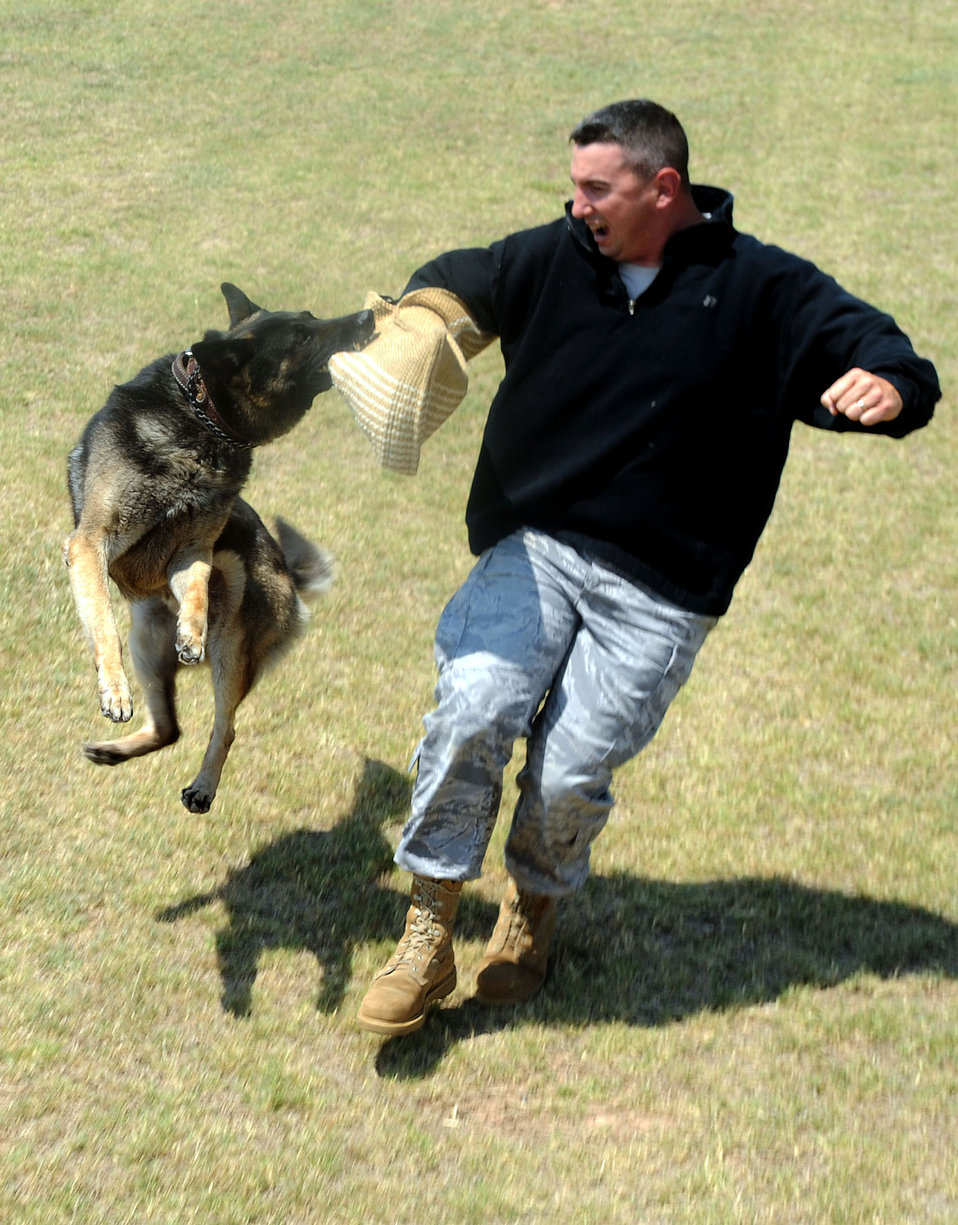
Grrrrrrr!

Tech. Sgt. Marcus King trains Endy, a military working dog, to attack certain areas of the body during a takedown June 9, 2011, at Altus Air Force Base, Okla. Sergeant King is a military working dog kennel master assigned to the 97th Security Forces Squadron.